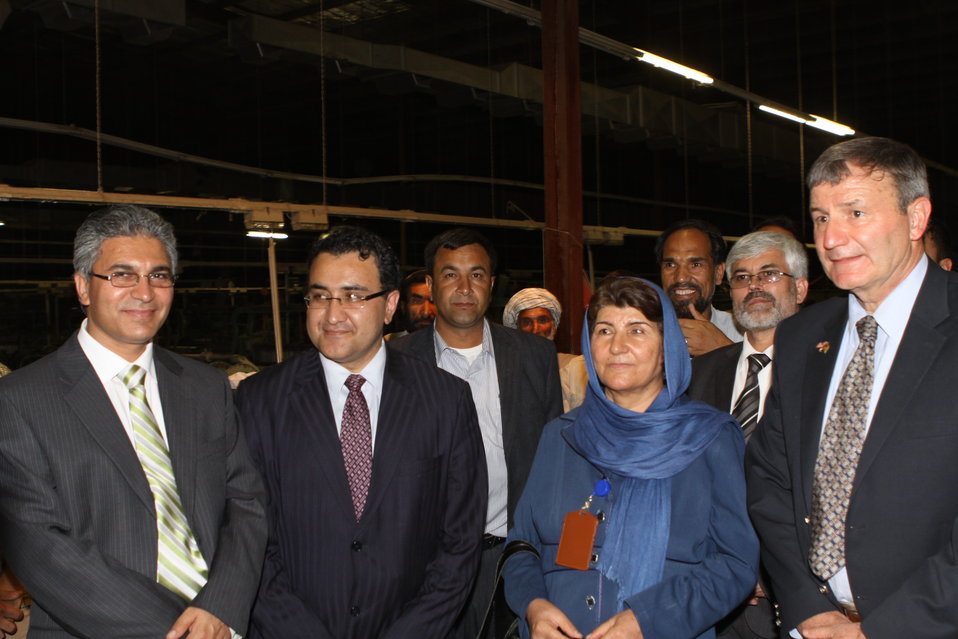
100525 Hirat Textile Company 770